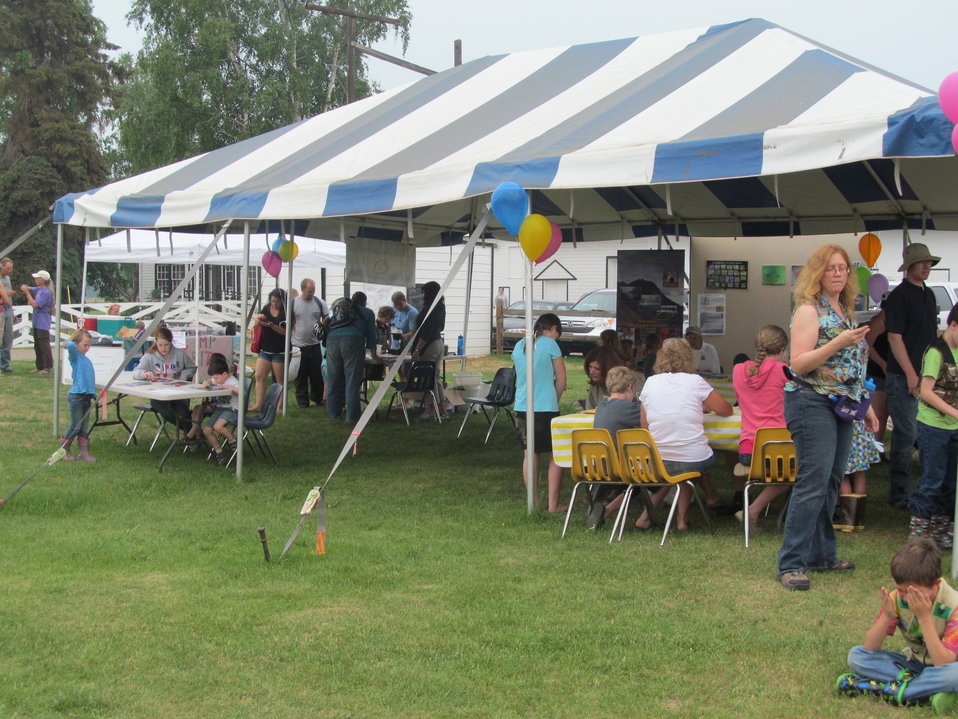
Dragonfly Day 2013

Many activities and stations to learn about dragonflies and wetlands (USFWS)